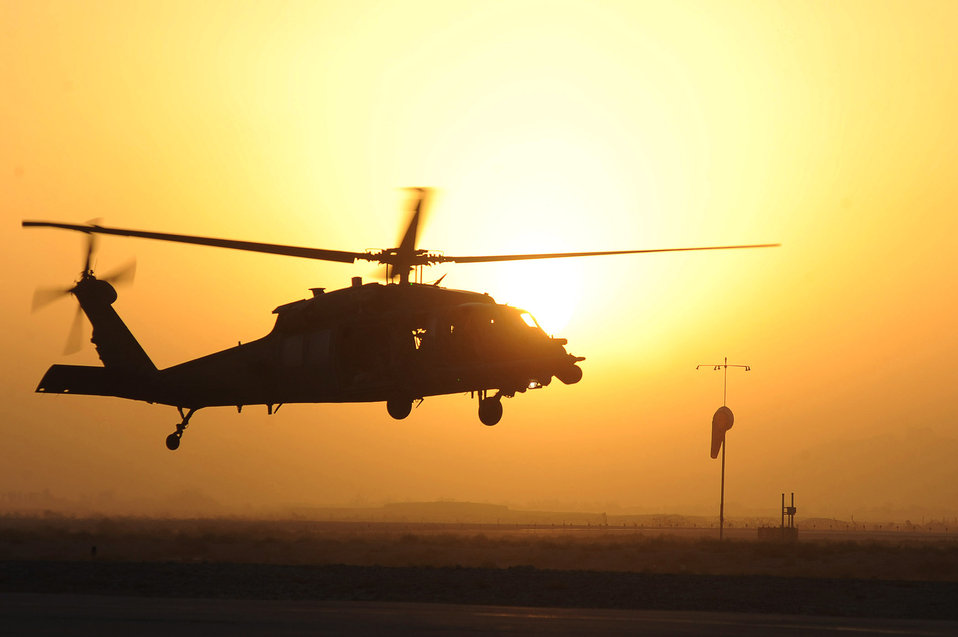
Another successful mission

An HH-60G Pave Hawk helicopter, flown by Airmen of the 26th Expeditionary Rescue Squadron, prepares to land Sept. 2, 2010, at Kandahar Airfield, Afghanistan.